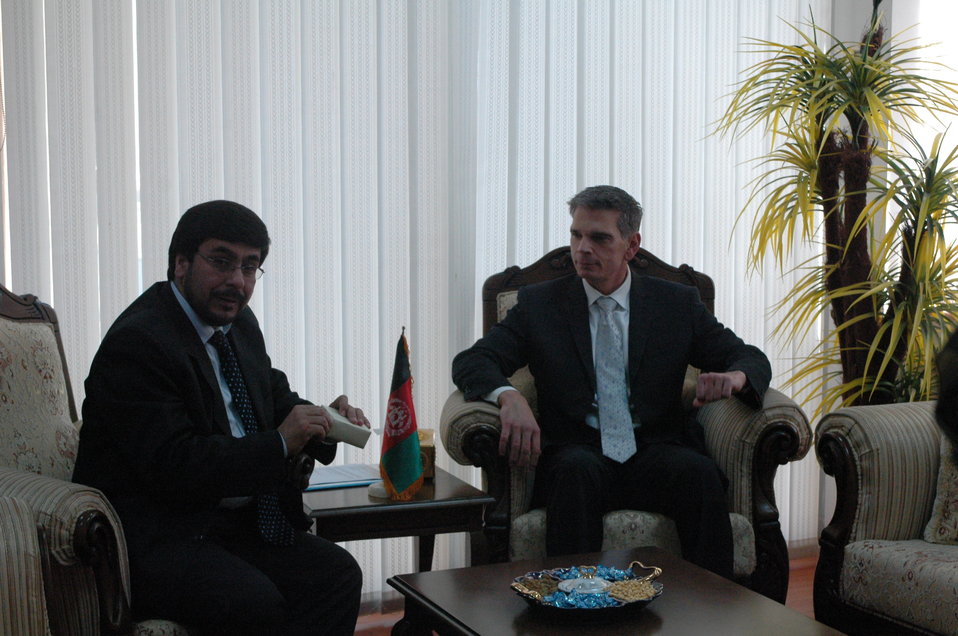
Community Based Stabilization Grants Ceremony, December 7, 2010